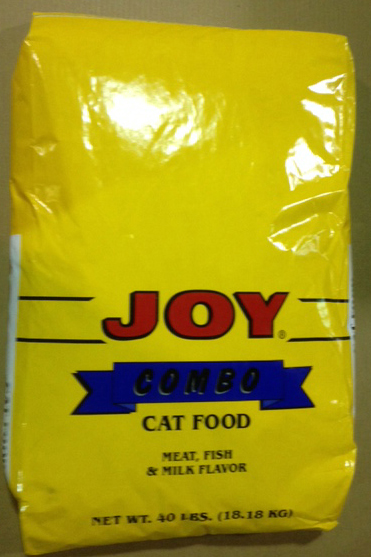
RECALLED – Dog Food, Cat Food

February 5, 2014 – Product Recall – Pro-Pet LLC Recalls a Limited Number of Dry Dog and Cat Foods Due to Possible Salmonella Contamination.